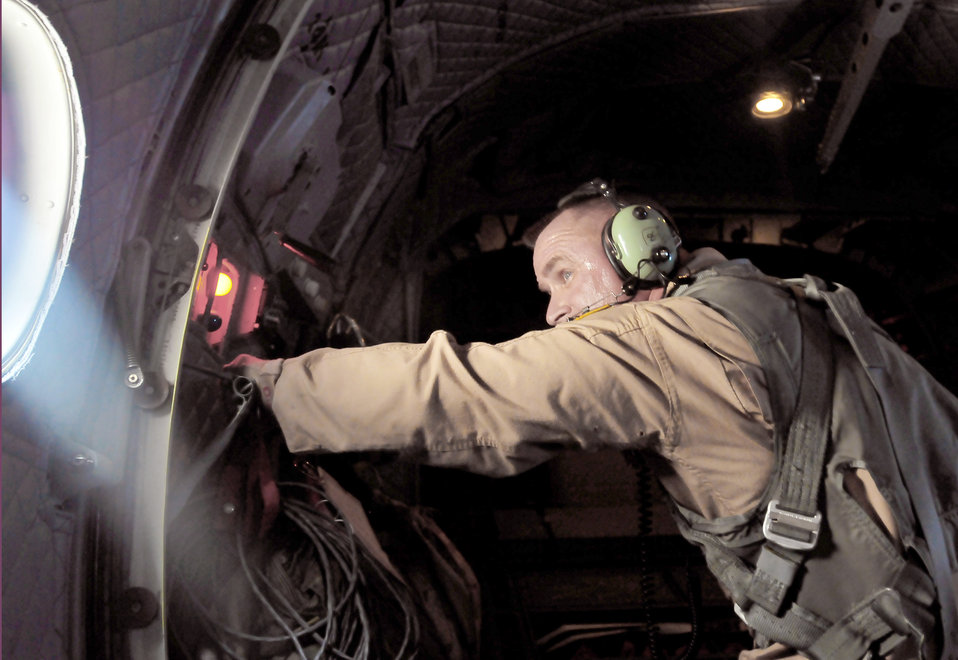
C-27 over Afghanistan

Master Sgt. Chris Ringland prepares to launch the cargo from the back of a C-27 Spartan during an airdrop July 1, 2010, over Afghanistan. This is the first air drop conducted by an aircrew for the C-27 in Afghanistan. Sergeant Ringland is with the 438th Air Expeditionary Advisory Group.